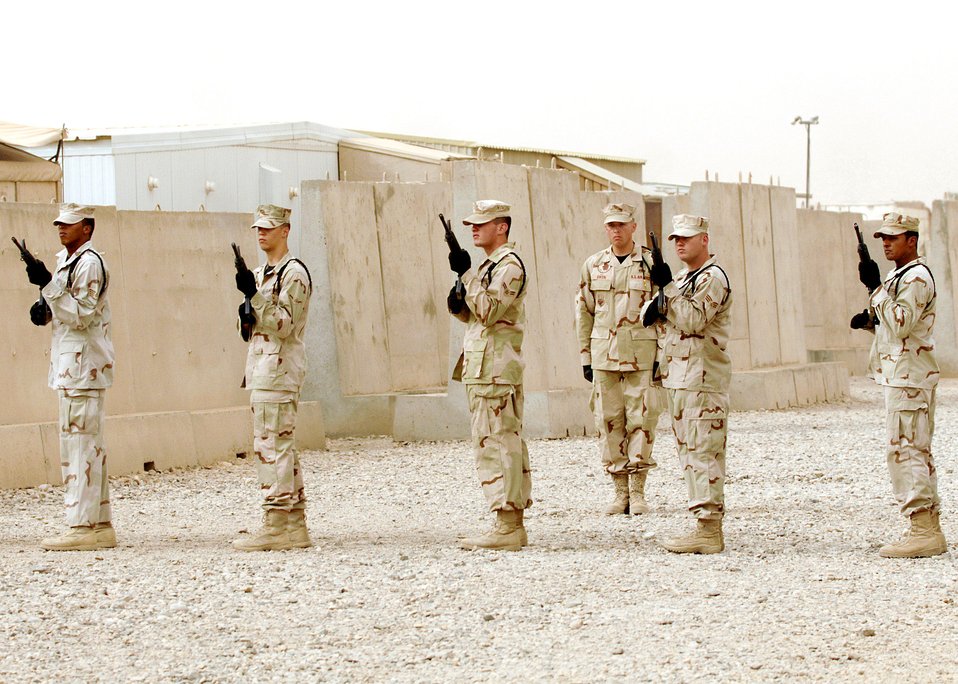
Honoring a fallen Airmen

Honor guard members from the 407th Expeditionary Group at Ali Air Base, Iraq, prepare for a 21-gun salute during a fallen Airmen ceremony May 28 in remembrance of Staff Sgt. John Self at Ali Air Base. Sergeant Self, a security forces member assigned to the 732nd Expeditionary Security Forces Squadron at Camp Bucca, Iraq, was killed May 14 by an improvised explosive device while on patrol.